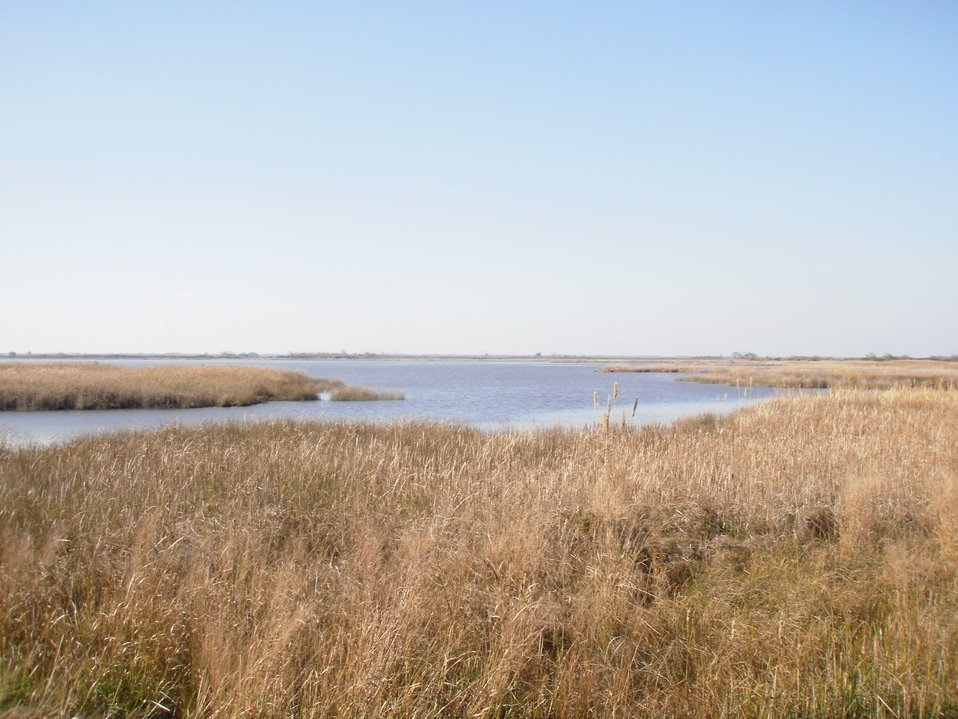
Marsh at Back Bay National Wildlife Refuge in Virginia.